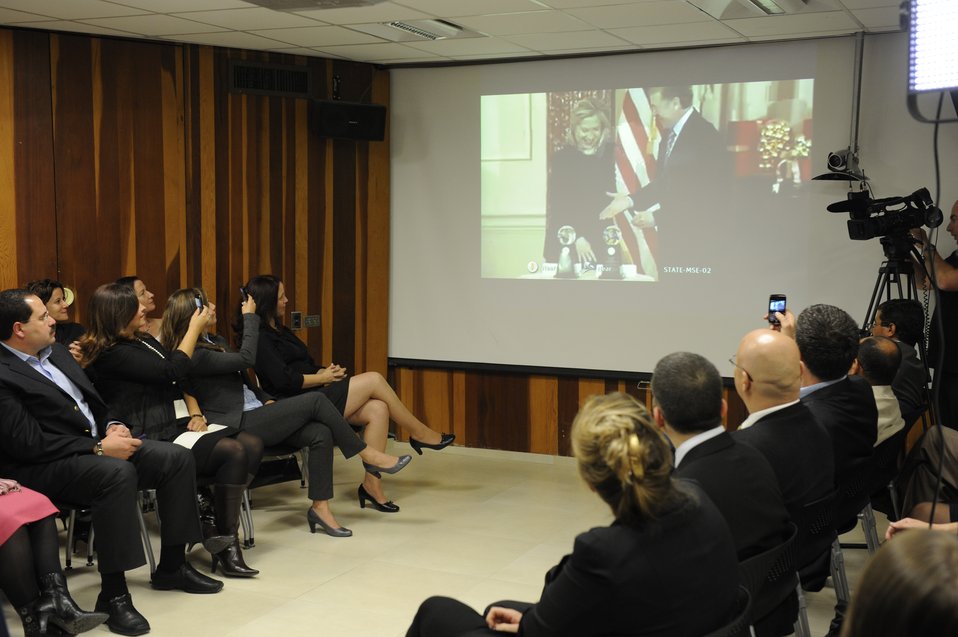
Ambassador Cunningham, Consul General Rubinstein, and CISCO Senior Manager Abzuk Celebrate the ACE Award in Jerusalem

U.S. Ambassador to Israel James Cunningham, U.S. Consul General to Israel Daniel Rubinstein, and Cisco Senior Manager Zika Abzuk, linked via digital video conference with the Secretary of State's Award for Corporate Excellent (ACE) event in Washington, D.C., celebrate the Award at a Jerusalem event in Israel, December 17, 2010.